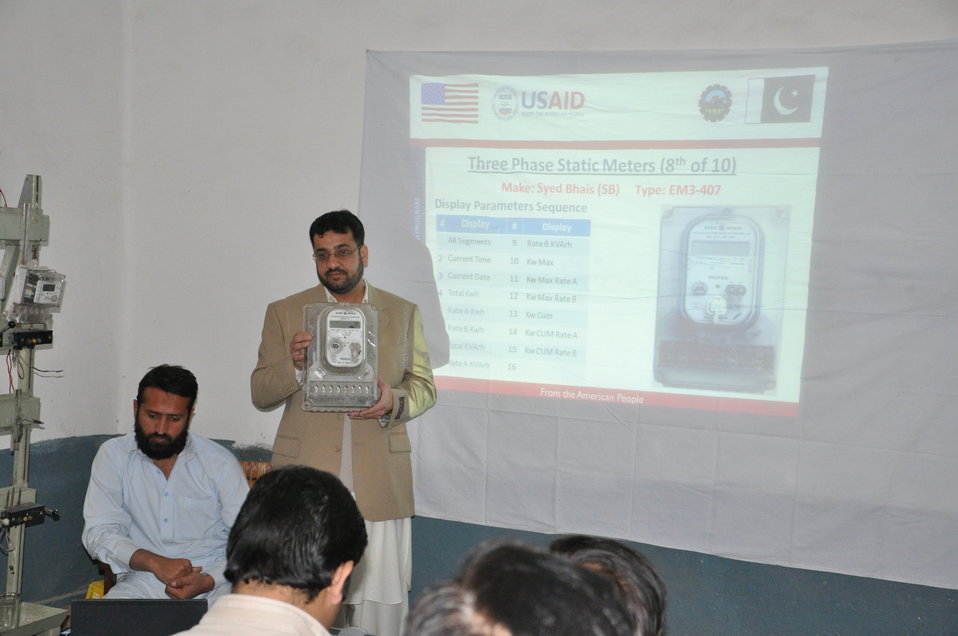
Meter Reading Training

Peshawar, February 27, 2012 - The USAID organized 'Quick Impact Meter Reading Training' at PESCO.